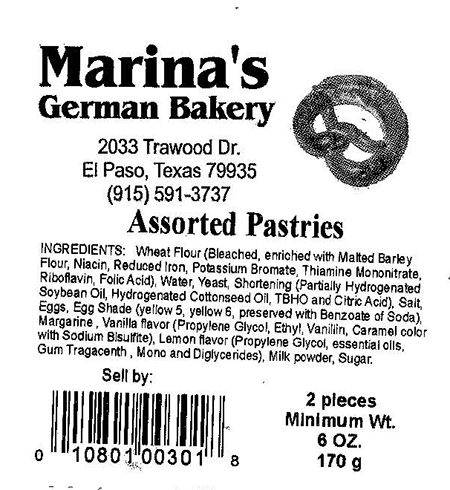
RECALLED – Pastry products

November 20, 2013 – Product Recall – Marina's German Bakery Issues Allergy Alert on Undeclared Almonds, Walnuts, and Hazelnuts in Pastry Products.